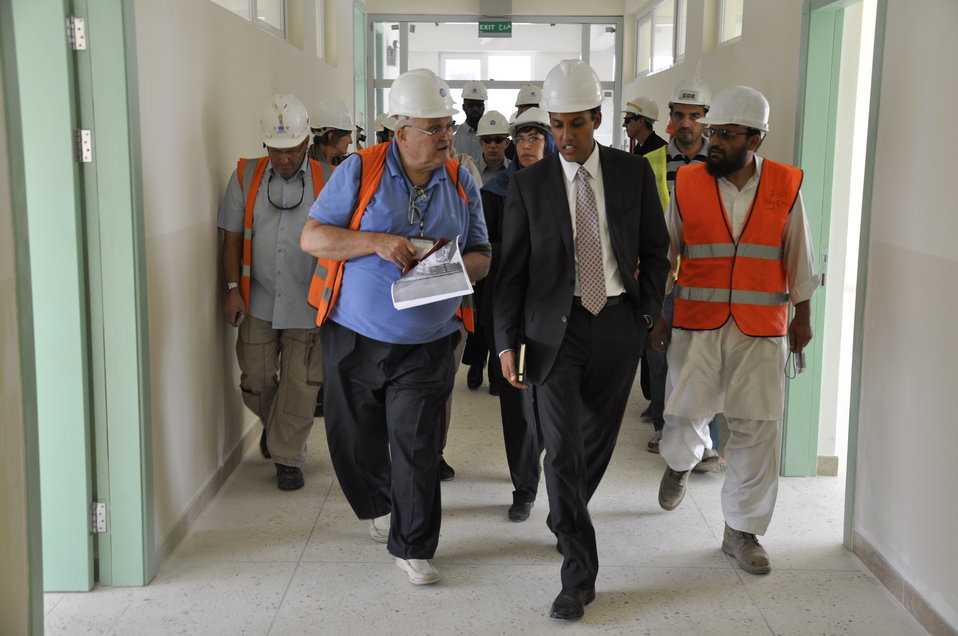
Ghazni High School in Kabul